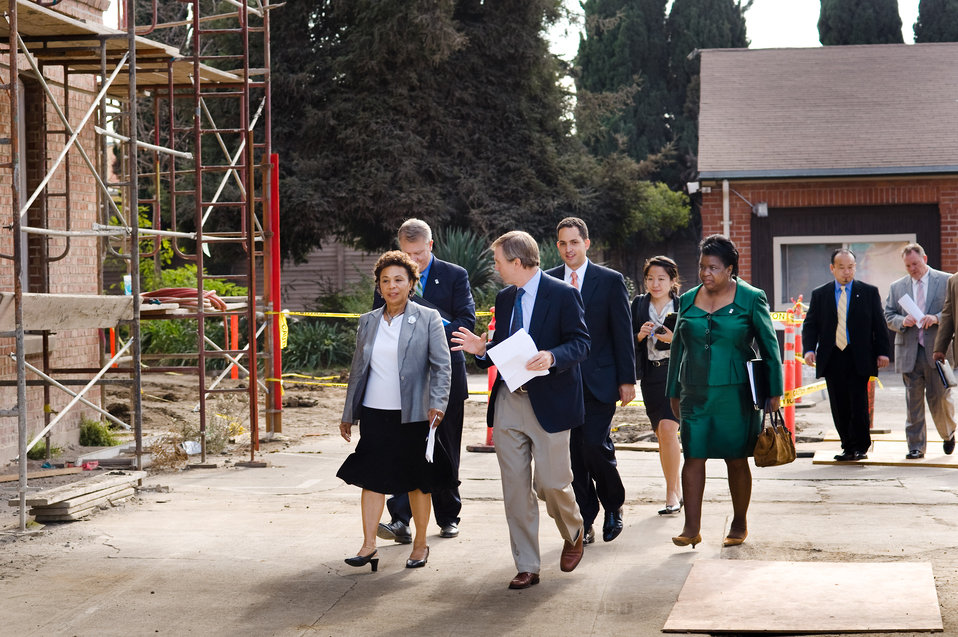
CDFI Awards for the Development of Affordable Housing in Low-Income Communities in Oakland, CA, 10/14/10

Congresswoman Barbara Lee (CA-09), Bridge Housing Chairman Rick Holliday, Treasury Deputy Assistant Secretary Don Graves and CDFI Fund Director Donna J. Gambrell tour St. Joseph’s Senior & Family Housing, an affordable housing development currently undergoing rehabilitation that will create 80 units of affordable senior housing and 58 units of affordable family rental housing in Oakland, California.